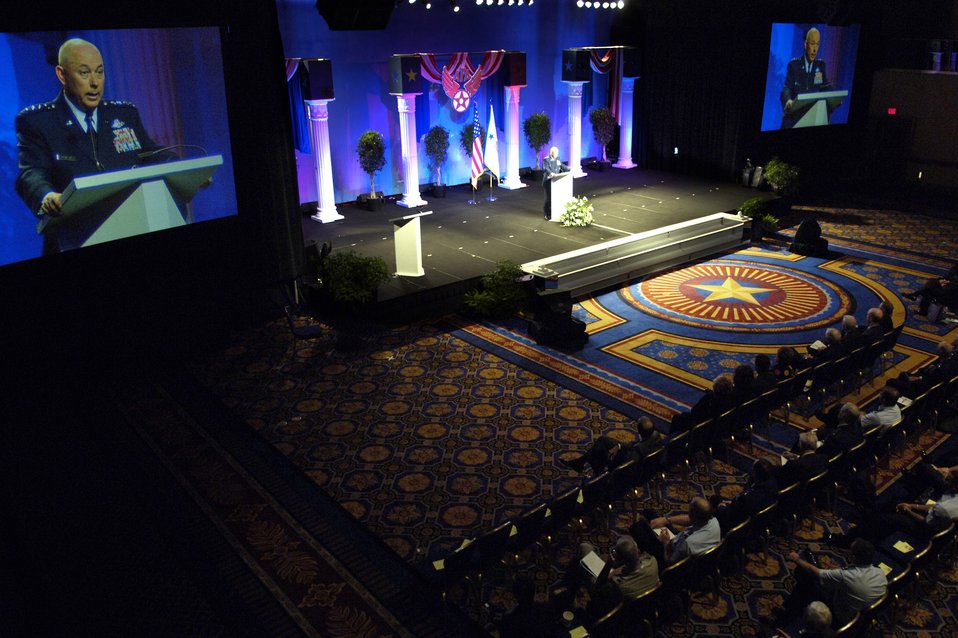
Moseley: Future of the Air Force

WASHINGTON -- Air Force Chief of Staff Gen. T. Michael Moseley gives his keynote address on the future of air and space power during the final day of the Air Force Association's 2005 Air and Space Conference and Technology Exposition here Sept. 14.